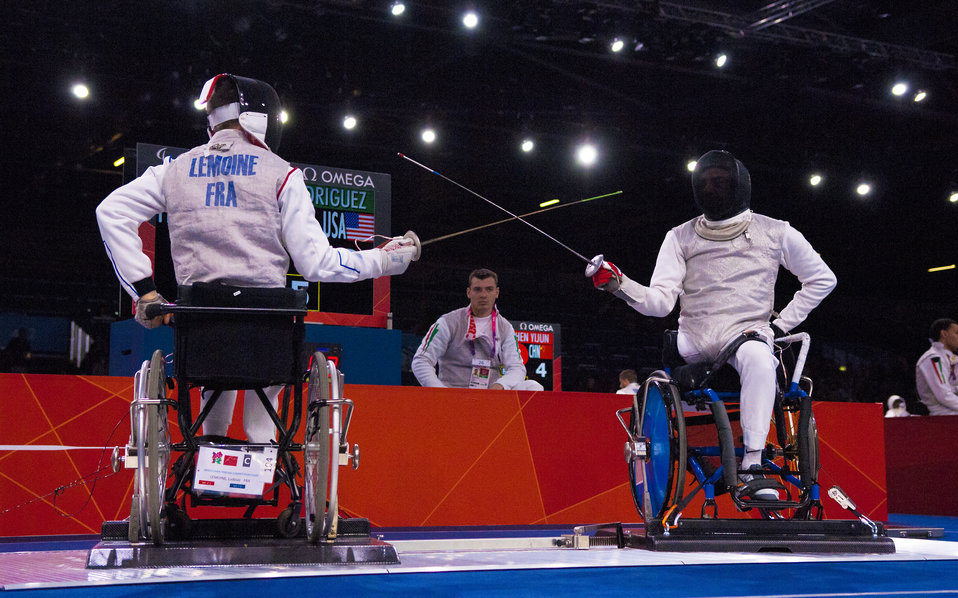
af veteran fencer

Former Air Force Staff Sgt. Mario Rodriguez, right, a member of the 2012 U.S. Paralympic fencing team, squares off with France's Ludov LeMoine at London's ExCel Centre during the Paralympic Games, Sept. 4, 2012.